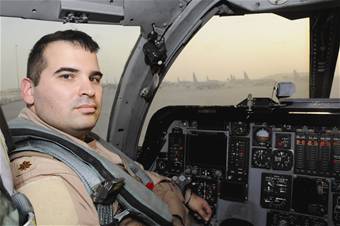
Brothers meet at 20,000 feet

Maj. Eric Moraes sits in the cockpit of a B-1B Lancer Sept. 16 at a Southwest Asia air base. Major Moraes was recently reunited with his brother at 20,000 feet over Afghanistan during a combat sortie Sept. 10. The brothers had been apart for a year when they met in the sky for the 10-minute reunion. Major Moraes is a B-1B pilot for the 379th Air Expeditionary Wing.